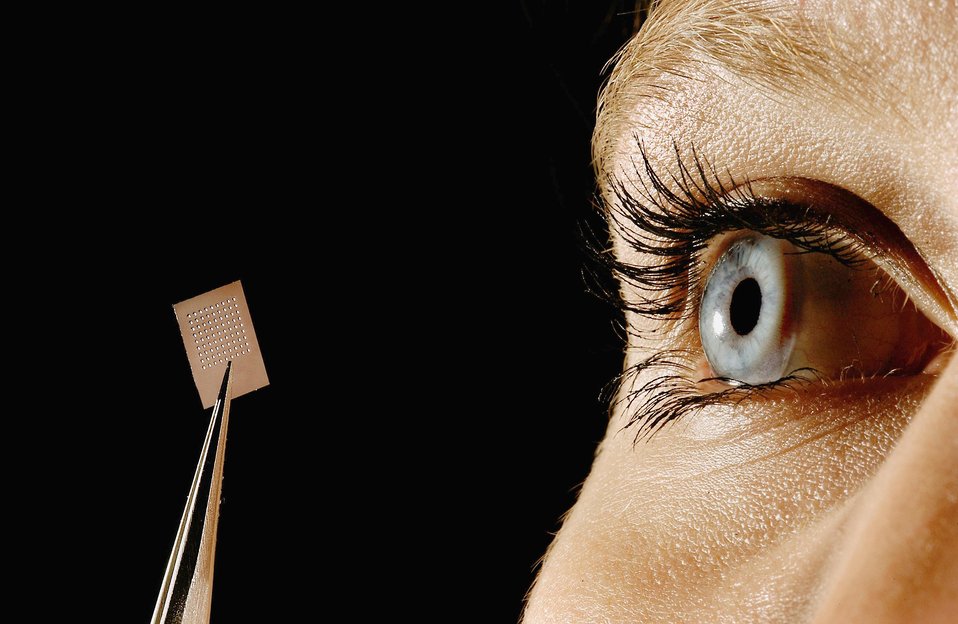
A PROTOTYPE OF THE MEMS-BASED ARRAY DESIGNED TO BE PLACED ONTO THE RETINA OF A BLIND PERSON.

DOE'S ARGONNE, OAK RIDGE, LAWRENCE LIVERMORE AND SANDIA NATIONAL LABORATORIES ARE PARTNERING WITH USC AND NORTH CAROLINA STATE UNIVERSITY TO DESIGN TINY MEMS (MICROELECTROMECHANICAL SYSTEMS) ELECTRODES. THE ELECTRODES WOULD BE IMPLANTED IN THE EYE ON THE SURFACE OF THE RETINA. THIS MICRO-ELECTRODE ARRAY WOULD PERFORM THE FUNCTION OF NORMAL PHOTO-RECEPTIVE CELLS, RESTORING VISION TO PATIENTS WITH RETINAL DISORDERS.